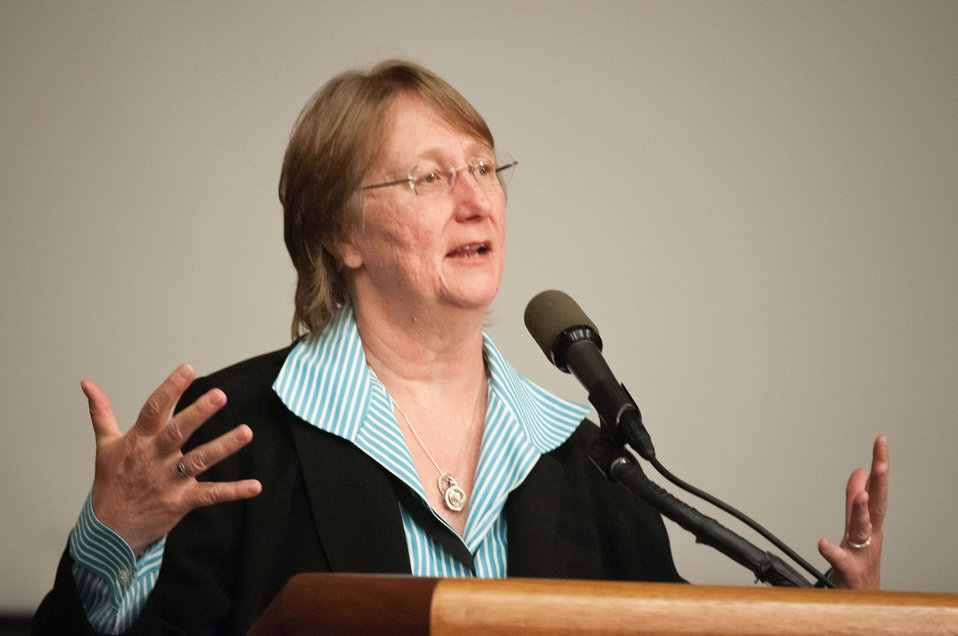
Carole Jett, Deputy Chief of Staff introduced a video message from Agriculture Secretary Tom Vilsack at the Lesbian, Gay, Bisexual and Transgender (LGBT) Pride Observance, “The Sum of Us: Lesbian, Gay, Bisexual and Transgender Pioneers” at the United States Department of Agriculture in Washington, D.C., Thursday, June 7, 2012.